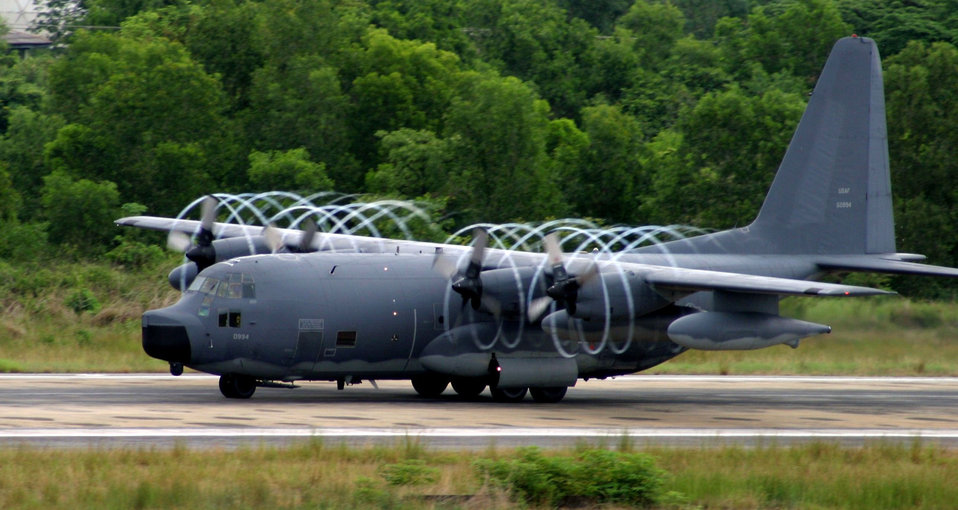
Twisters

UDON THANI, Thailand -- An MC-130P Combat Shadow from the 17th Special Operations Squadron at Kadena Air Base, Japan, begins its takeoff roll on the runway here. People from the 353rd Special Operations Group recently deployed to Thailand for Cobra Gold 2003, a multination, multiservice exercise designed to ensure regional peace, strengthen the ability of the Thai armed forces and demonstrate U.S. resolve in the region.